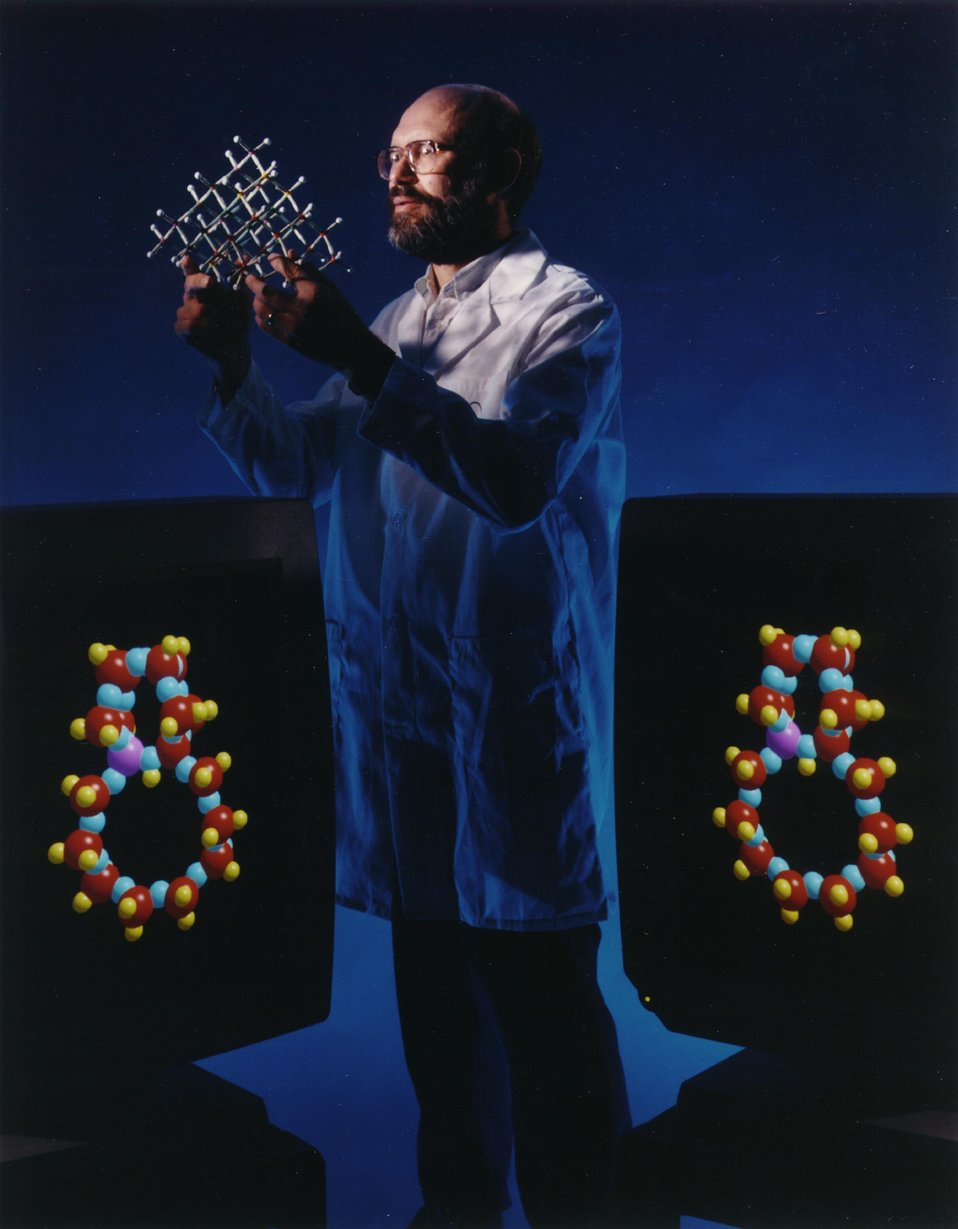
ANL CHEMIST USES PHYSICAL AND COMPUTER MODELS TO STUDY GROWTH MECHANISMS OF NANOCRYSTALLINE DIAMONDS.

ARGONNE IS A MULTI DISCIPLINARY RESEARCH CENTER WITH MAJOR MISSIONS IN ADVANCED ENERGY TECHNOLOGIES, ENVIRONMENTAL MANAGEMENT AND BASIC SCIENCE, INCLUDING CHEMISTRY, BIOLOGY, PHYSICS, COMPUTER SCIENCE AND MATERIALS SCIENCE. THE LABORATORY ALSO RUNS A NUMBER OF WORLD CLASS NATIONAL USER FACILITIES, INCLUDING THE ADVANCED PHOTON SOURCE AND THE INTENSE PULSED NEUTRON SOURCE.